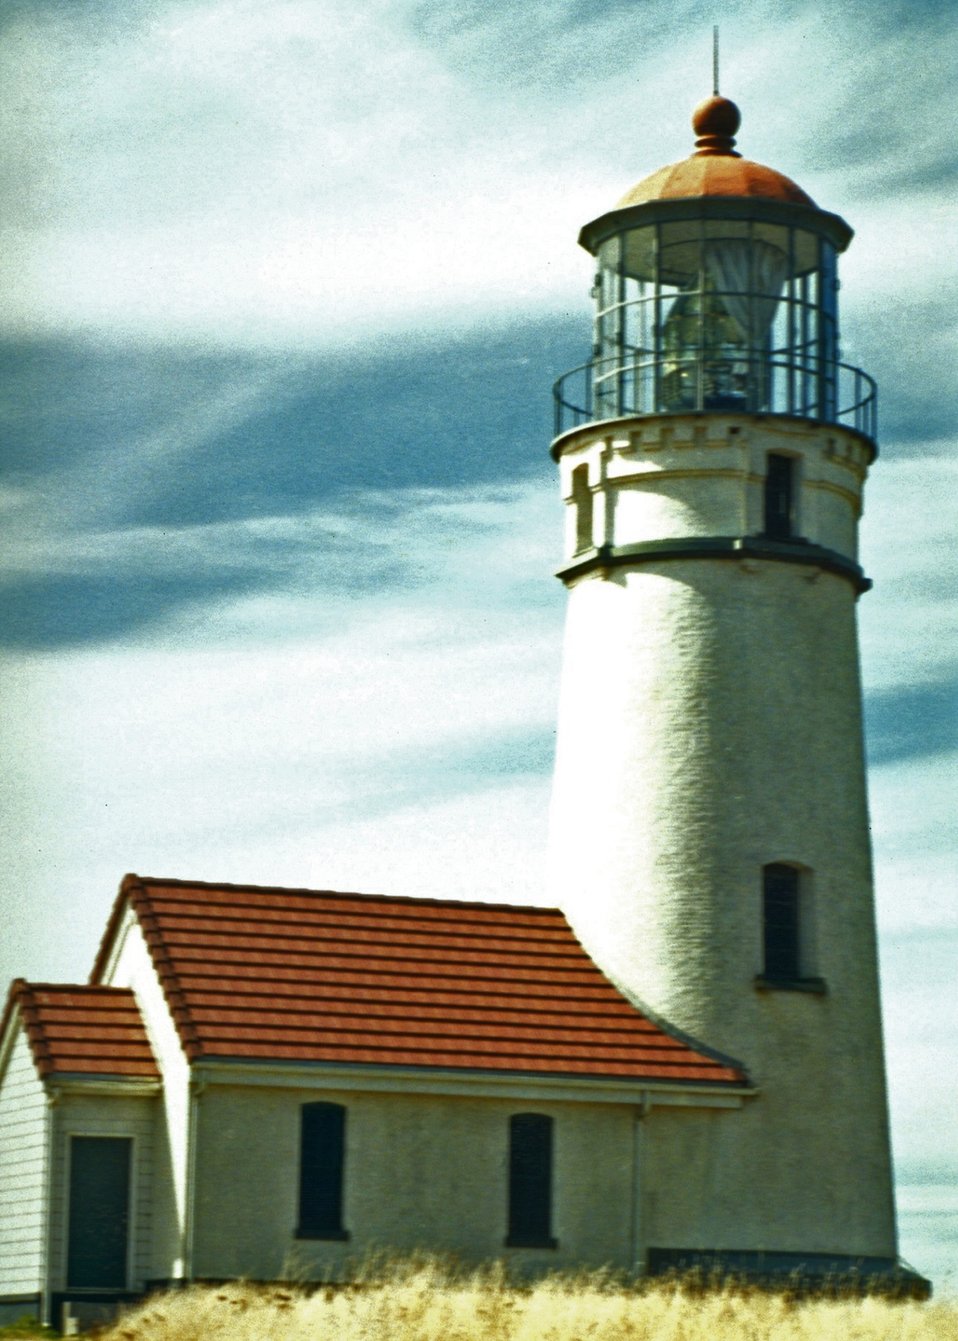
Cape Blanco Lighthouse during daytime.